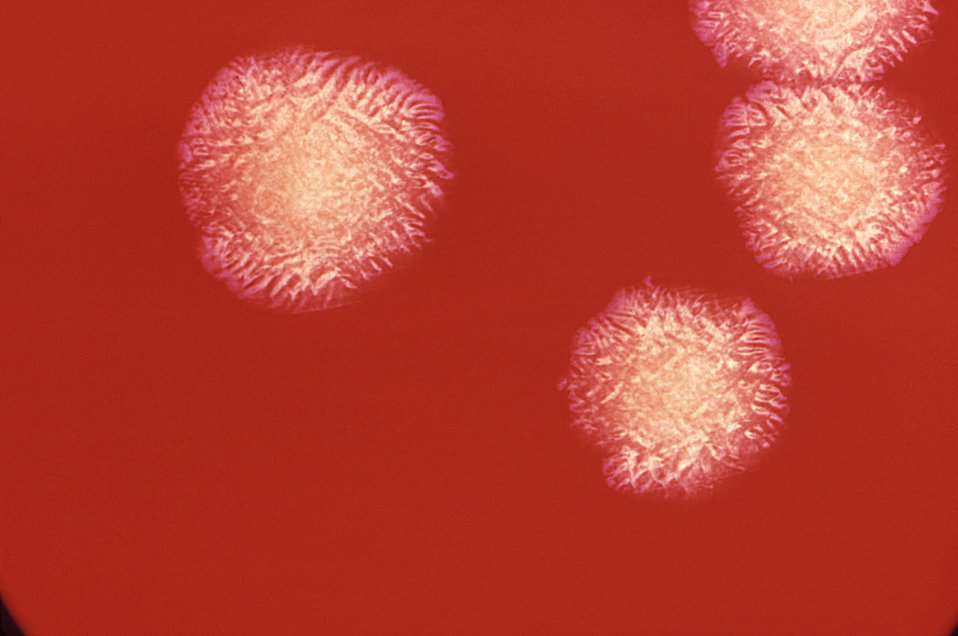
This 1972 photograph revealed the morphology displayed by four colonies of Fusobacterium fusiforme bacteria that were grown on blood agar medium for 48 hours.